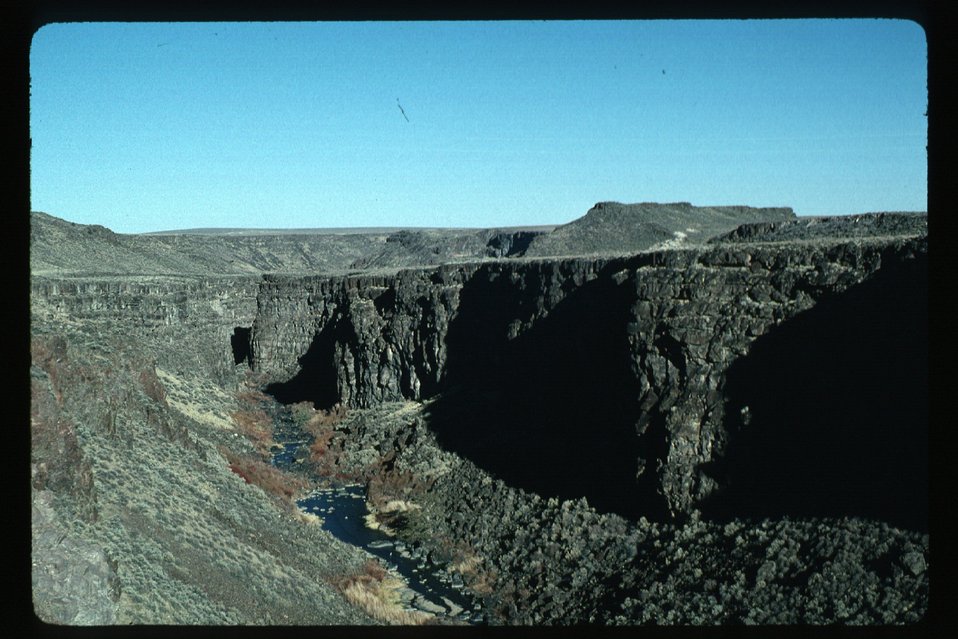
Salmon Creek Canyon Riparian Salmon Field Office USRD Upper Snake River District